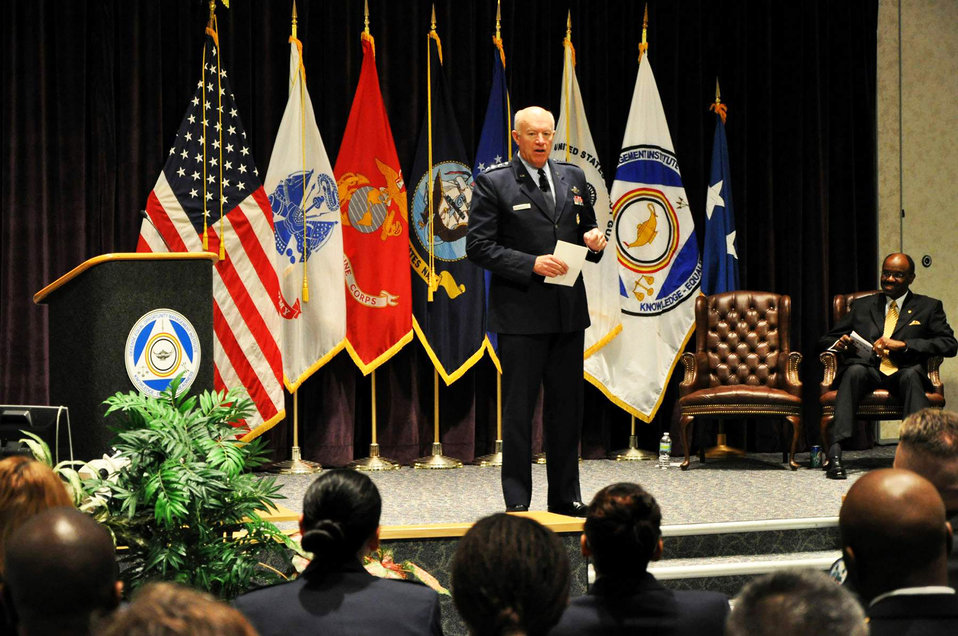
ANG director visits DEOMI

Lt. Gen. Harry M. Wyatt III addresses Guard and Reserve graduates of the Defense Equal Opportunity Management Institute Equal Opportunity Adviser Reserve Component Program Feb. 4, 2011, at Patrick Air Force Base, Fla. The EOARCP curriculum develops a base of knowledge and skills that allow graduates to assess human relations climates in their organizations and to provide advice and assistance to commanders to prevent, reduce, or eliminate discriminatory practices. Director of the Air National Guard,